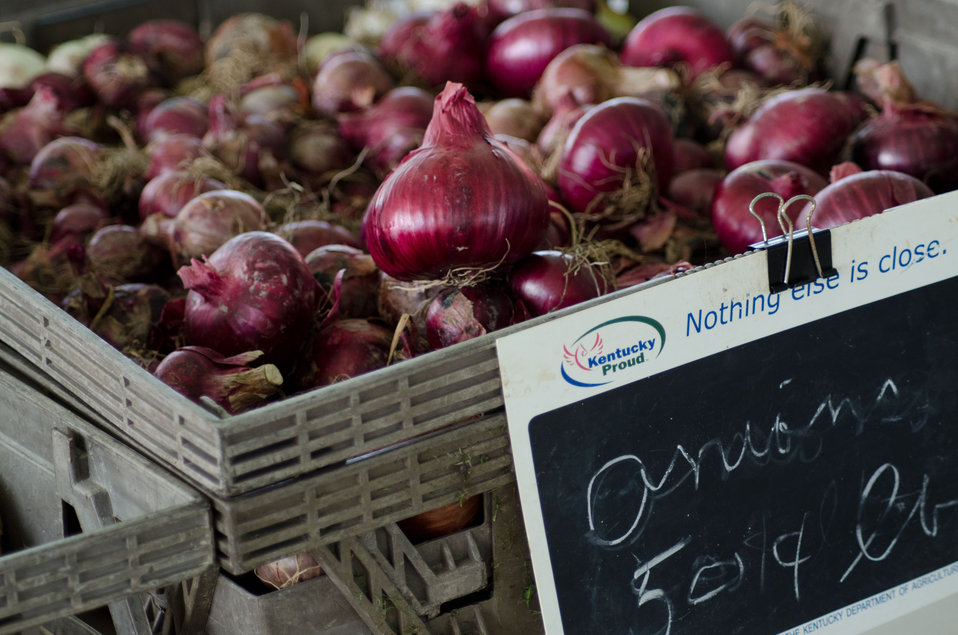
Red onions for sale at the Bath County Agricultural Education and Marketing Center, Owingsville, KY, on Friday, July 15, 2011. The Center was the recipient of a $400,000 Rural Business Enterprise Grant. It has given farmers and producers from Bath and surrounding counties the opportunity to manufacture and market their locally grown and locally produced value-added and “Kentucky Proud” branded products, including but not limited to, fresh produce, artisan crafts and specialty food products. The Center is open year-round and allow residents to sell products in four different retail categories, including Kentucky products, regional crafts, “green” groceries and bakery/deli. Several producers expressed their gratitude for Rural Development’s assistance in making the center a reality. The project was made possible through funding the American Recovery and Reinvestment Act of 2009 enacted by the 111th United States Congress in February 2009 and signed into law on February 17, 2009, by President Barack Obama.